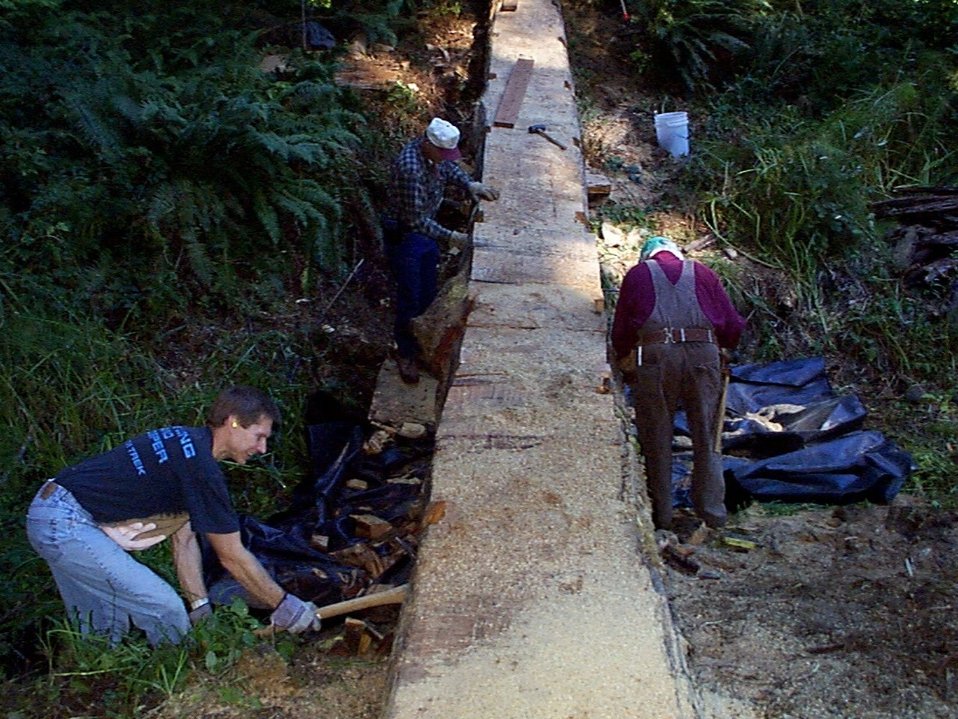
Boy Scouts install hand rail on the foot bridge at McGowen Creek.